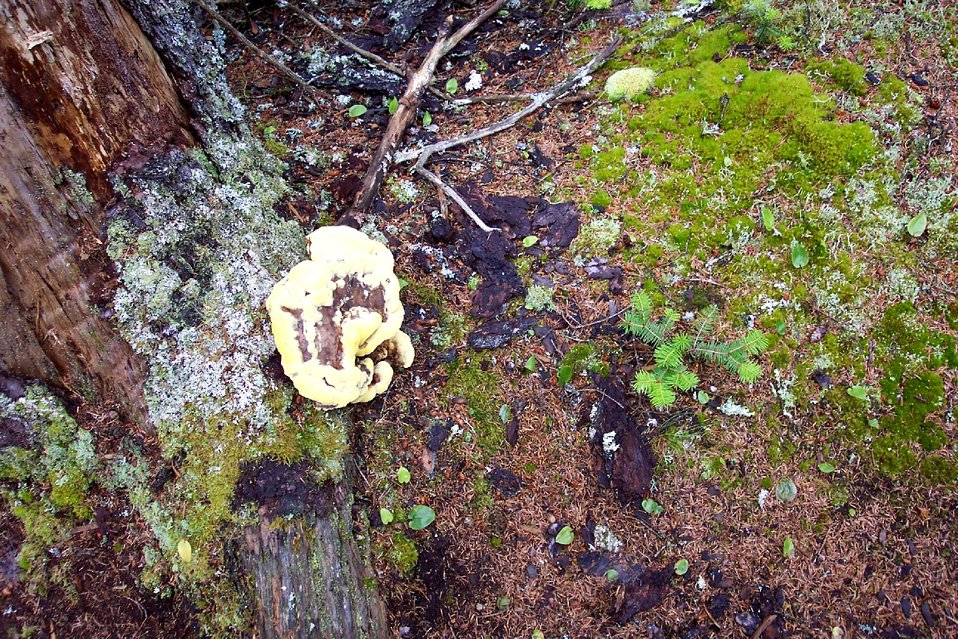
A yellow amorphous mushroom surrounded by light-green moss, dark green moss, and fallen branches.